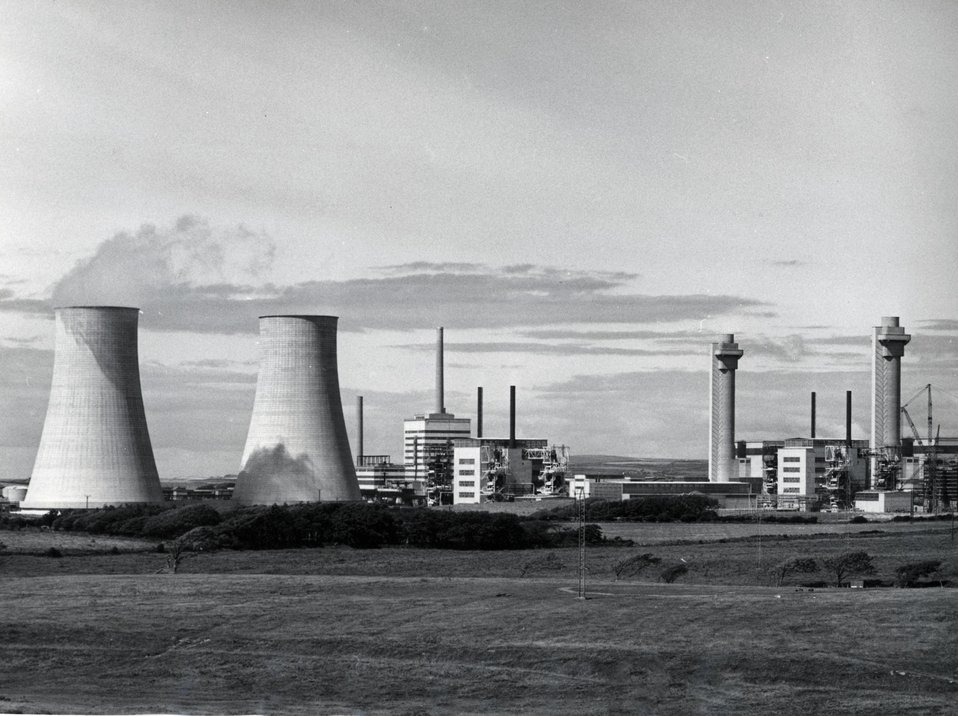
Calder Hall, the world's first full-scale atomic power station, is here shown nearing completion. In the background are the chimneys and works of the plutonium factory of Windscale. c. 1956